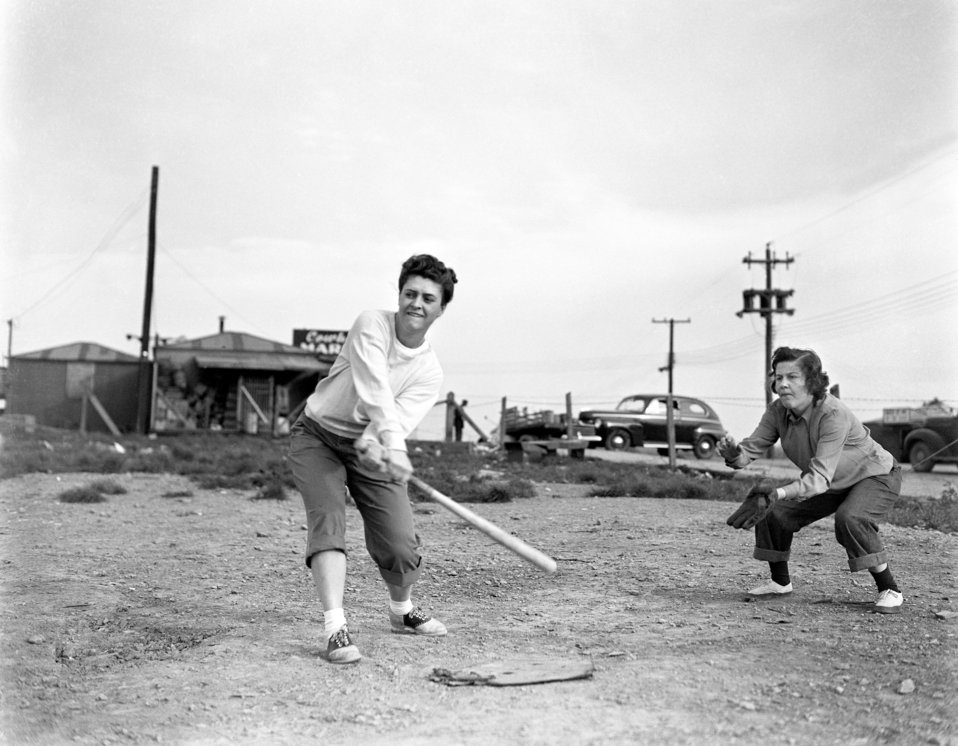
Softball Oak Ridge 1947

3424-4 DOE photo Ed Westcott 4-24-1947 Oak Ridge Tennessee